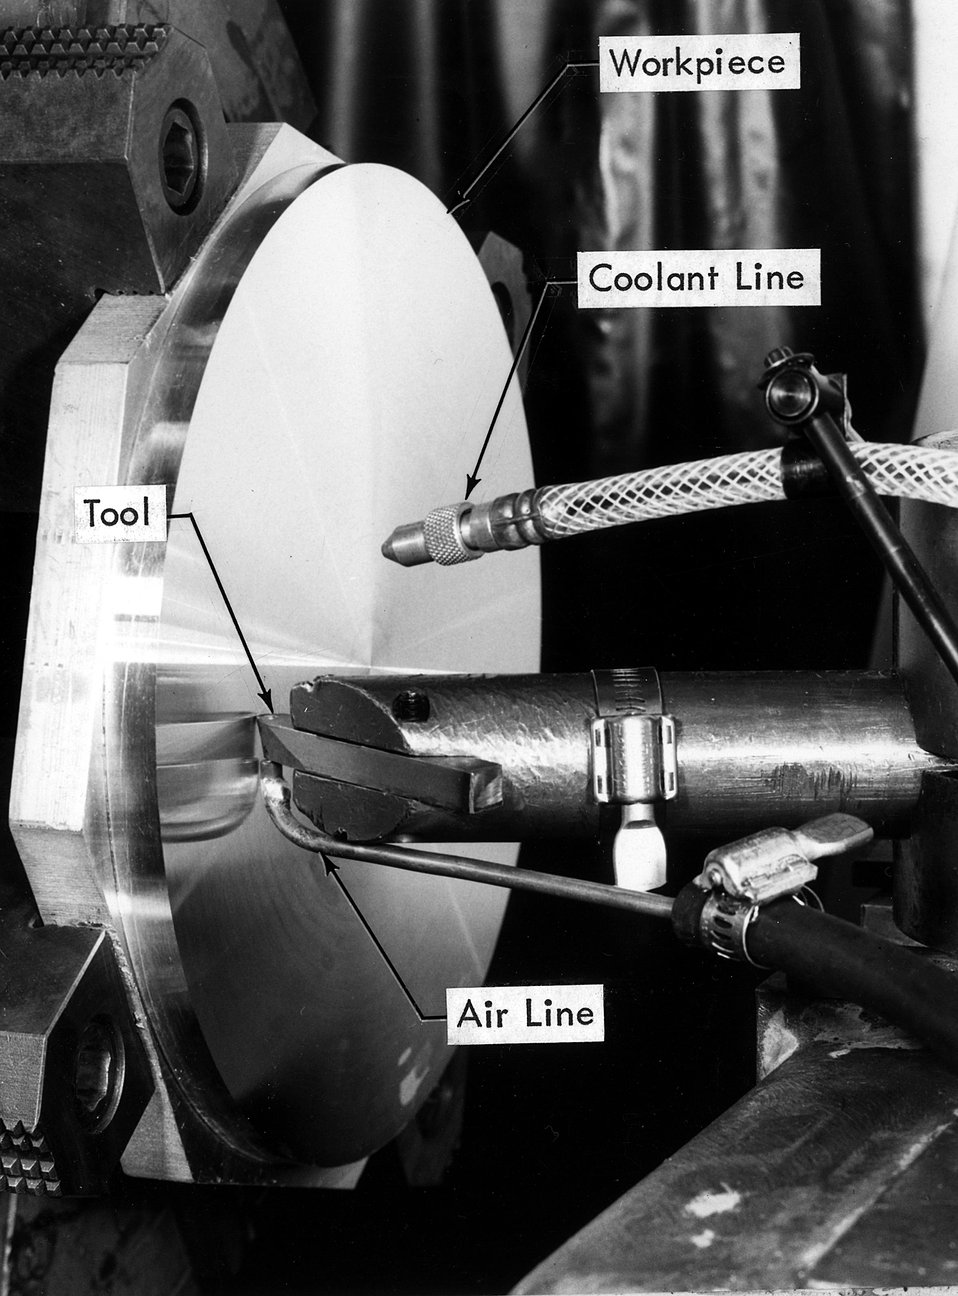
A pneumatic chip breaker was developed at the Oak Ridge Y-12 plant for use with conventional cutting tools.